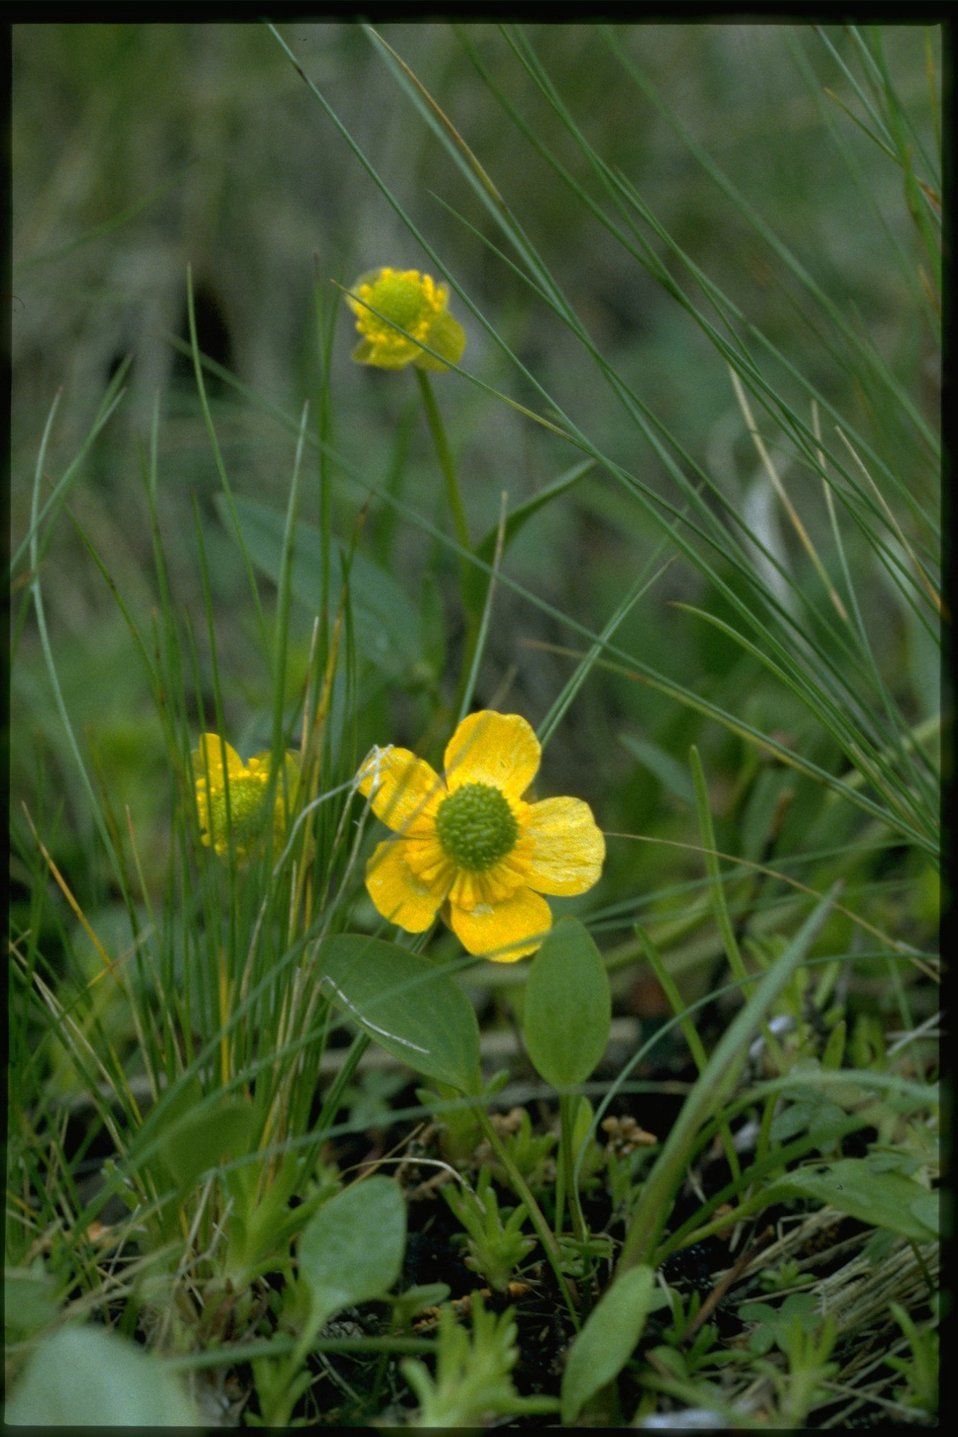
Closeup shot of Sagebrush Buttercup, Ranunculus Glaberrimus, wildflowers.